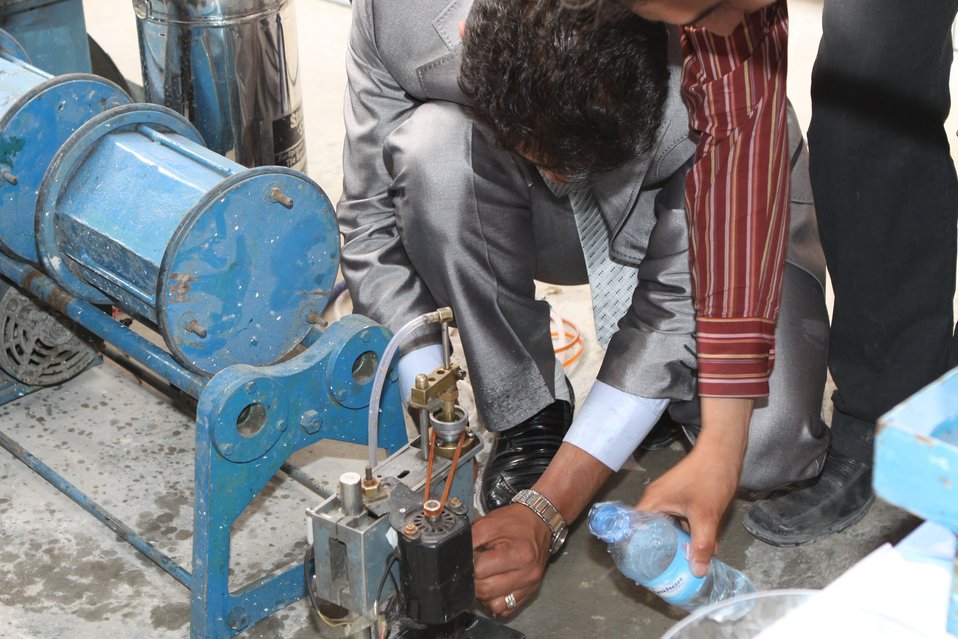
100525 Hirat Marble Conference 499